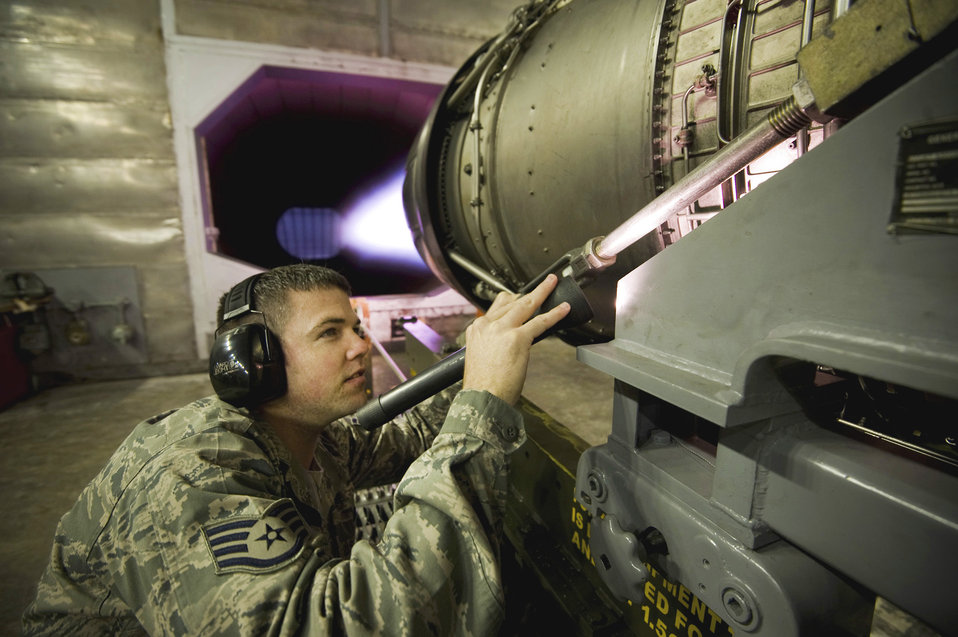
You're in my spot(light)

Staff Sgt. Chris Browne, 35th Maintenance Squadron aerospace propulsion test cell technician, monitors an F-16 Fighting Falcon engine running in the Hush House May 27, 2010, at Misawa Air Base, Japan. The Hush House allows maintainers to test and inspect jet engines before returning them to the flightline.